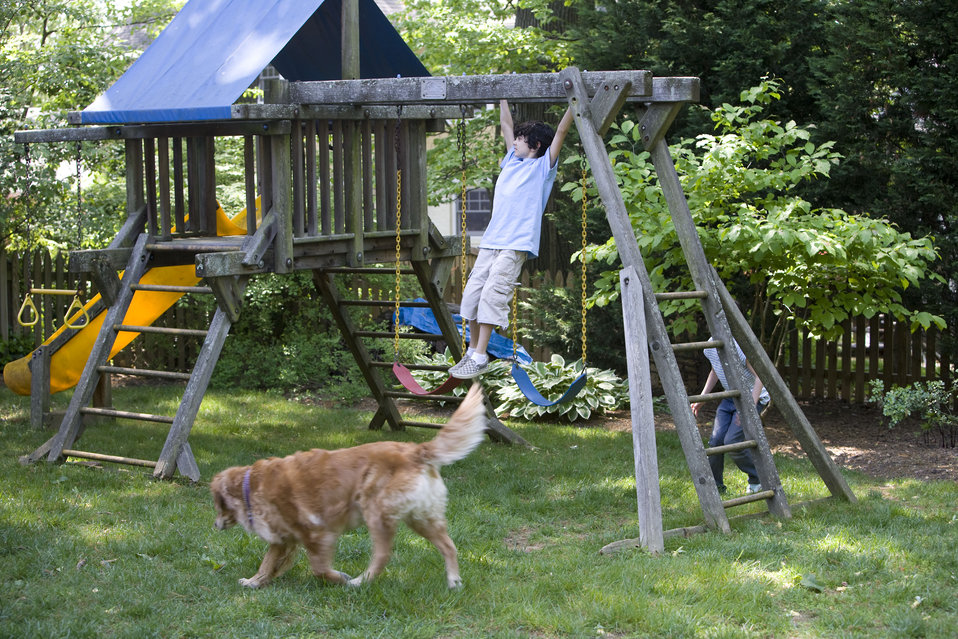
It's important to note that older wooden playsets may have been treated with arsenic and/or creosote, and therefore, parents need to know if these chemicals were used in their manufacture.